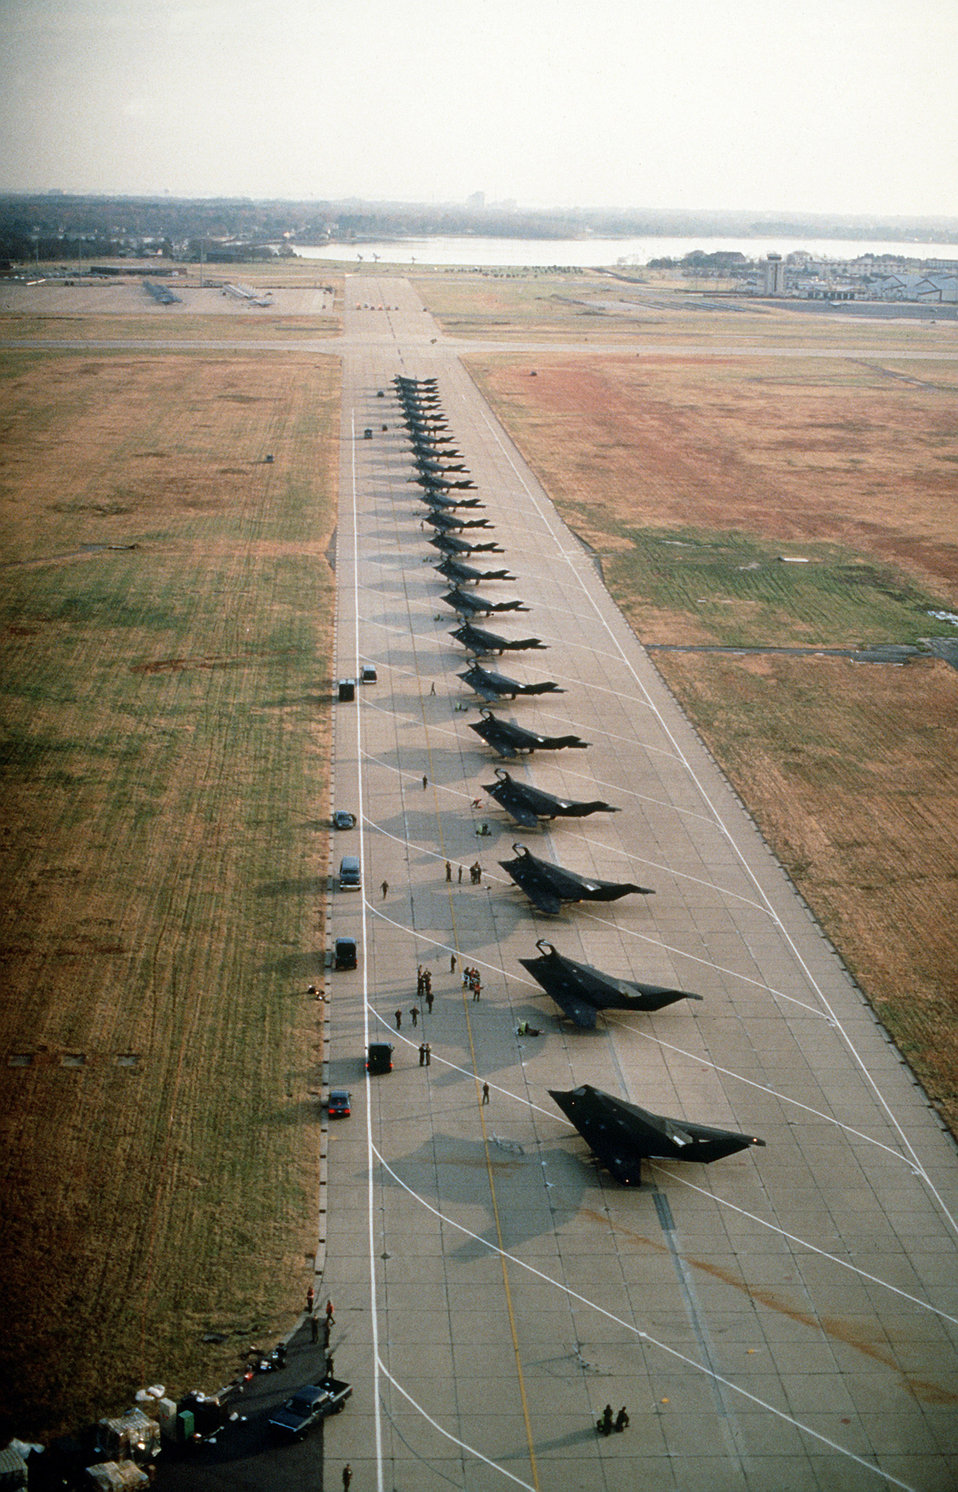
F-117A Stealth fighter aircraft from the 37th Tactical Fighter Wing, Tonopah Test Range, Nev., line the runway after arriving for an overnight stay while deploying to Saudi Arabia during Operation Desert Shield.